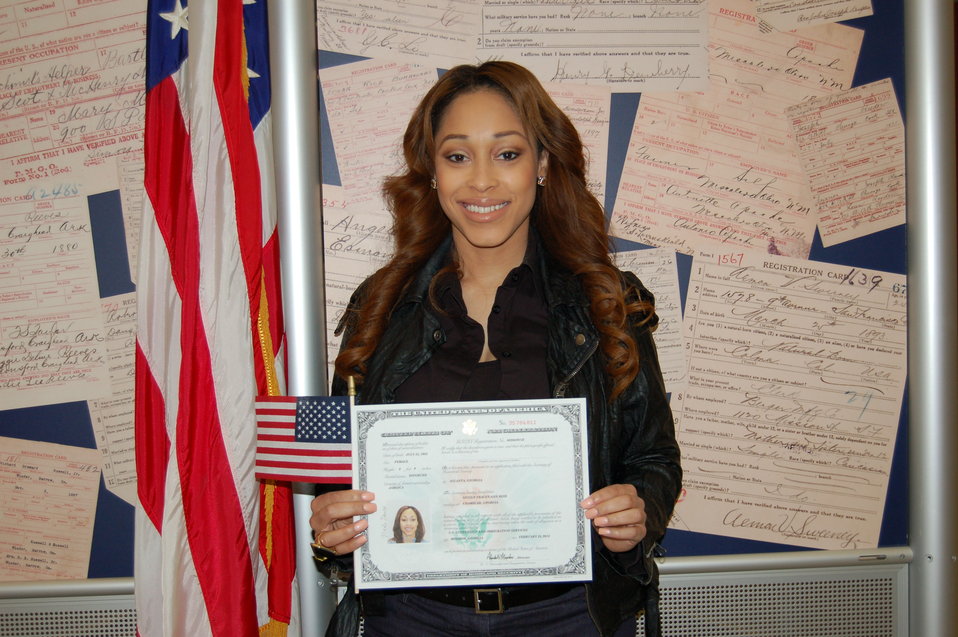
New Citizens